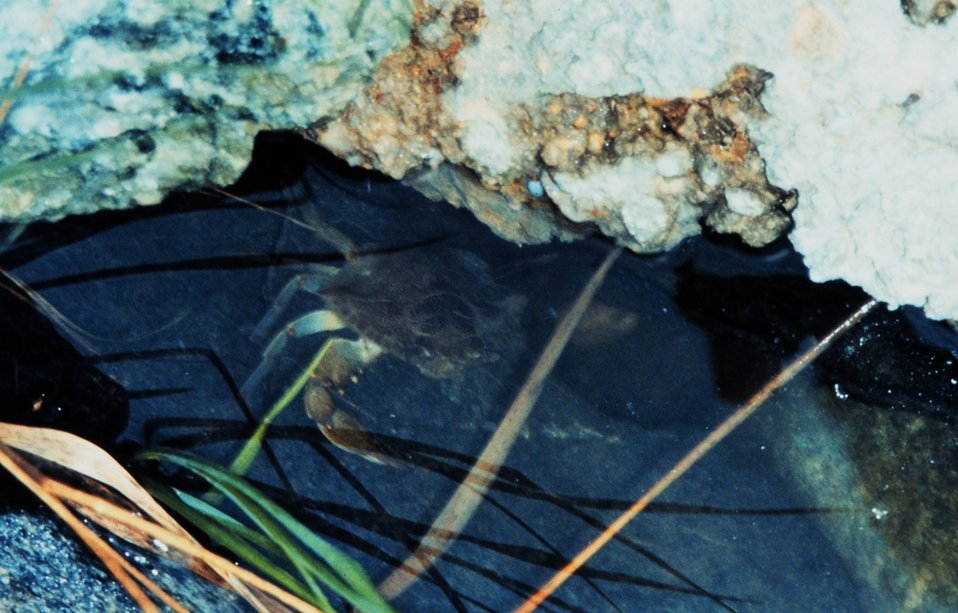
A Maryland Blue Crab, Callinectes sapidus, seeking shelter under a rocky ledge.